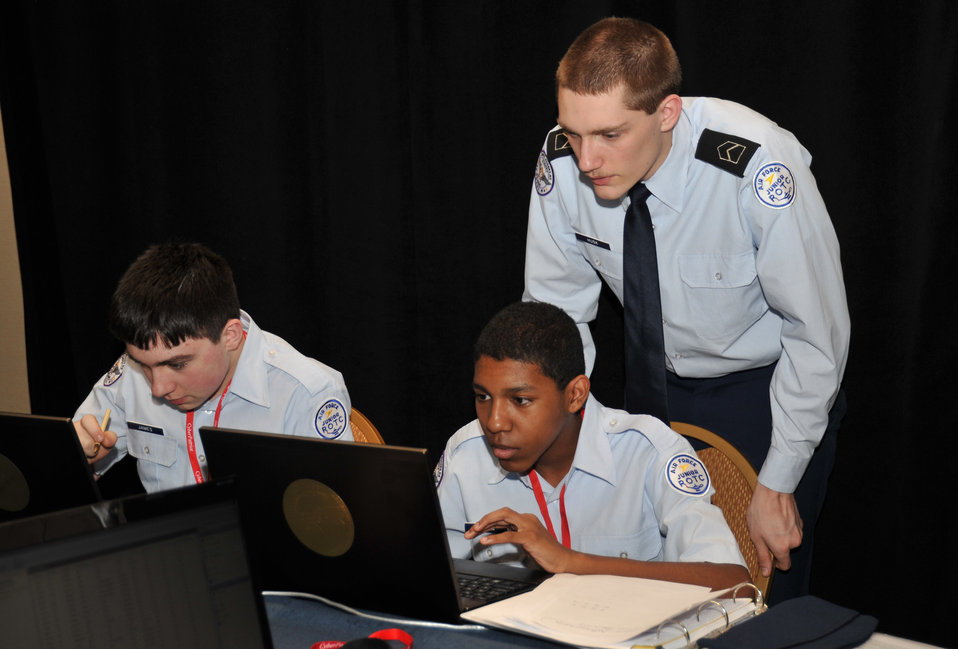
Young cyber-warriors display teamwork

Air Force Junior ROTC Cadet 2nd Lt. Clayton Husk, at back, assists Cadet Airman Chamberlain James, left, and Cadet Airman Joseph Ceniza in closing loopholes in their network security during the CyberPatriot IV competition at the National Harbor, Md., March 23, 2012. Their team, ‘Air Pirates’, from Spokane, Wash., went on to win second place in the All-Service Division of the event.